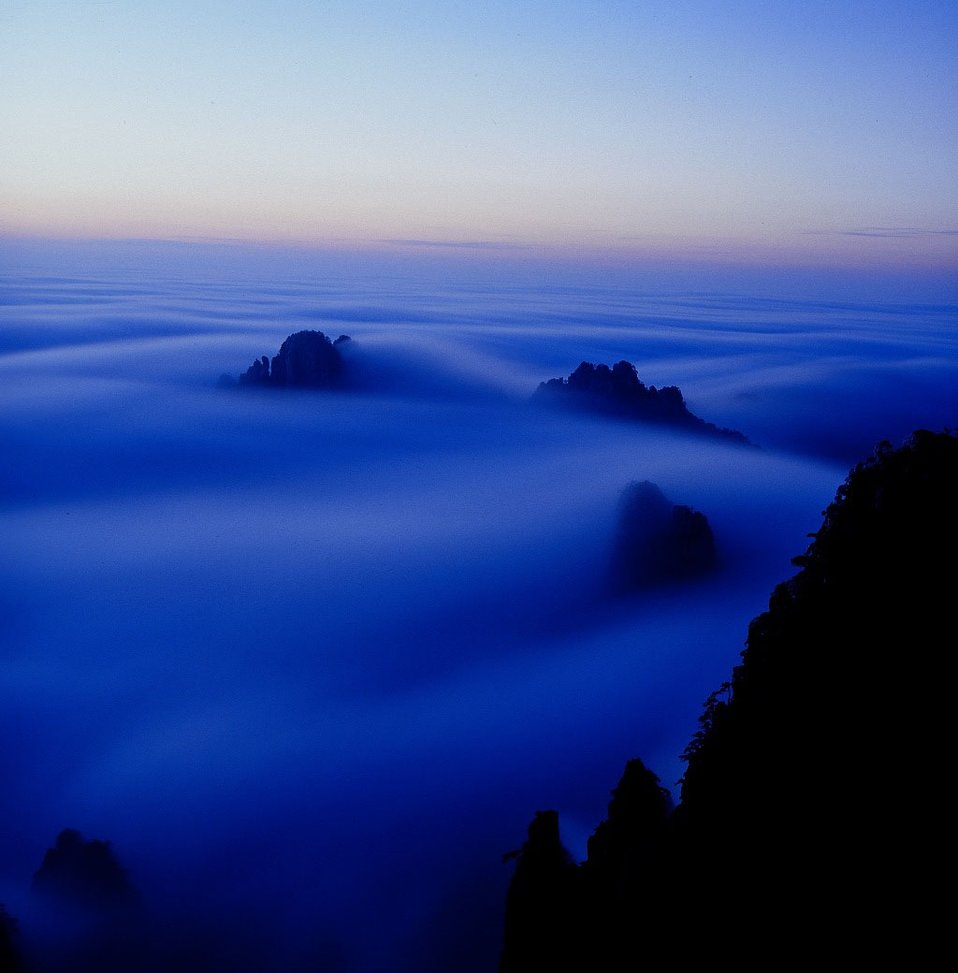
Uploaded by request of Hu Fusheng

Taken in Huangshan, China

Huangshan is well known for its beautiful mountains and sea of clouds. An old saying: There is no need to see any other mountains after you visit Huangshan.